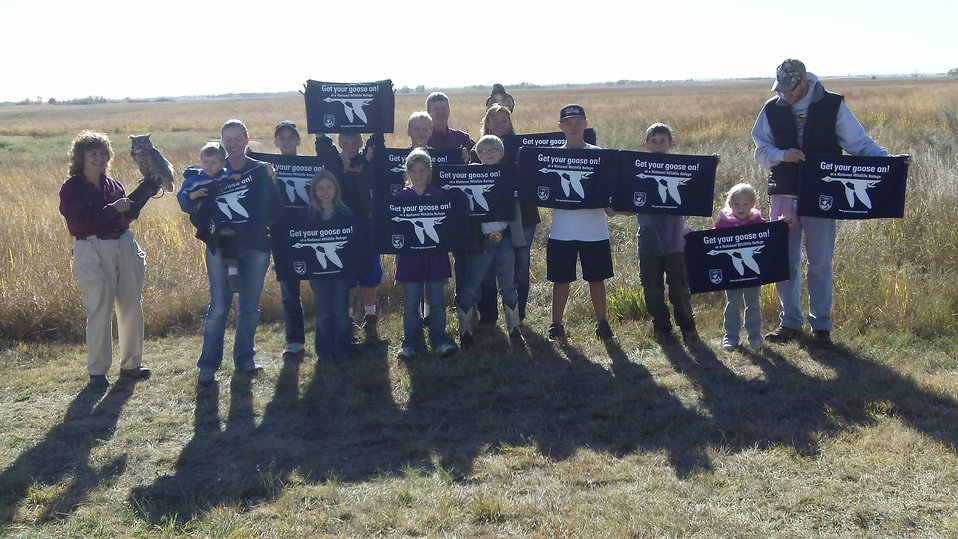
Get Your Goose On! - Raptor Style!

During Huron Wetland Management District's 2012 Prairie Festival, visitors were treated to an up close and personal look at various birds of prey.